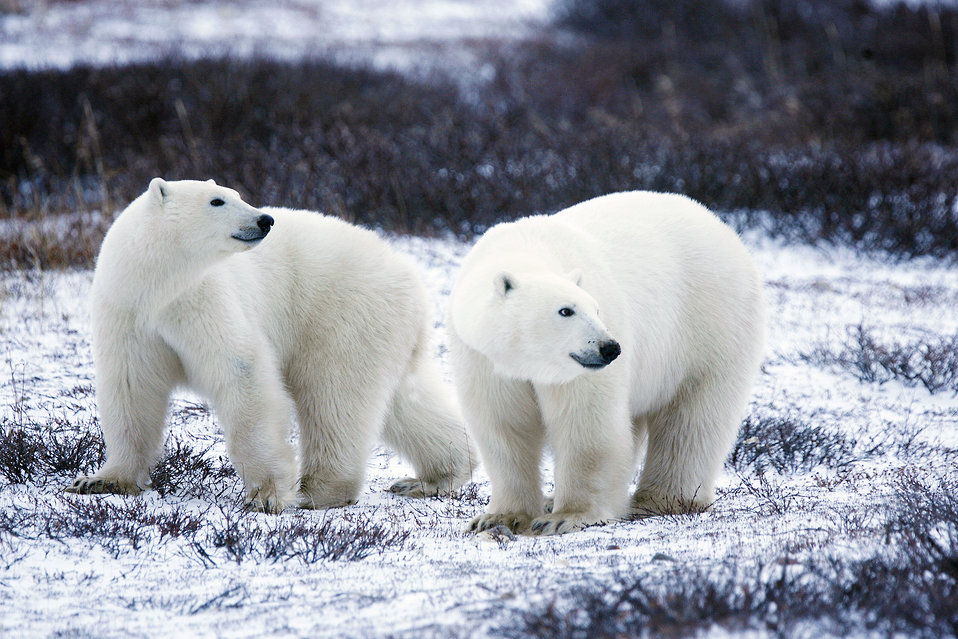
polar bear pair